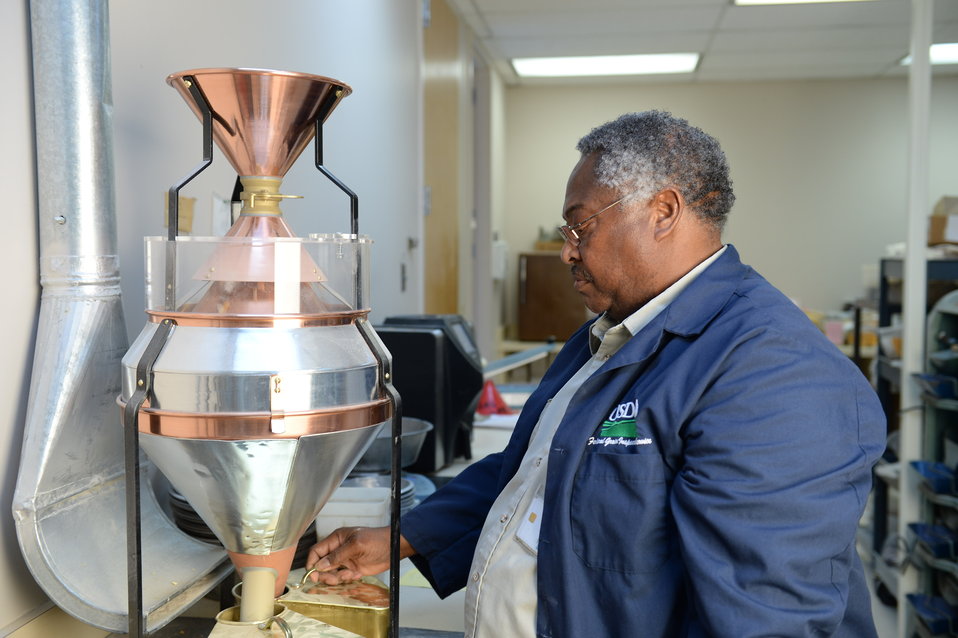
A U.S. Department of Agriculture (USDA) Grain Inspection, Packers and Stockyards Administration (GIPSA) Federal Grain Inspection Service (FGIS) scientist tests corn at the FGIS inspection laboratory in New Orleans, LA on Monday, Nov. 18, 2013.